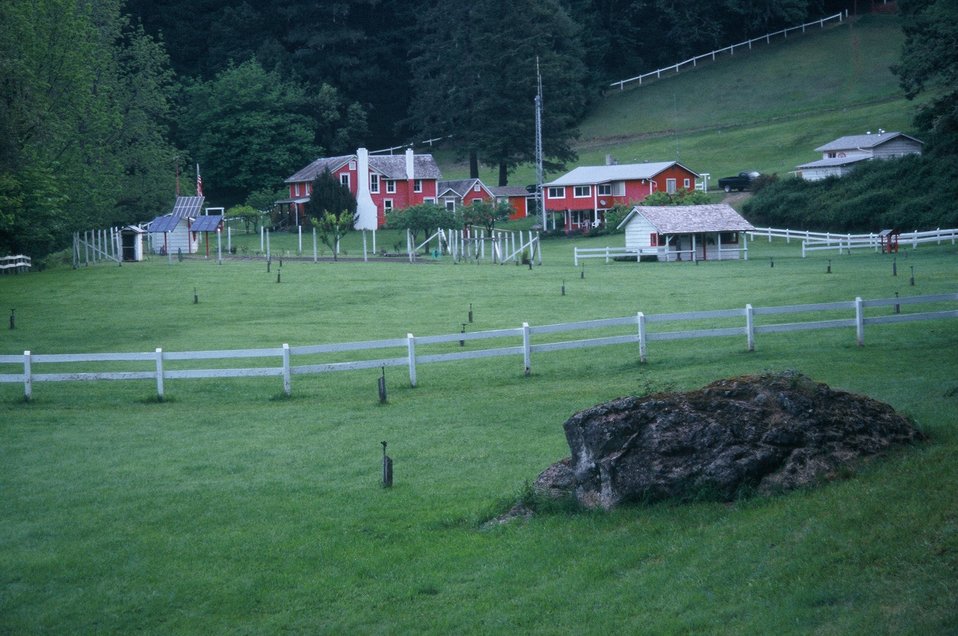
Wild section of the Rogue River from Grave Creek to Foster Bar May 19 to May 22.